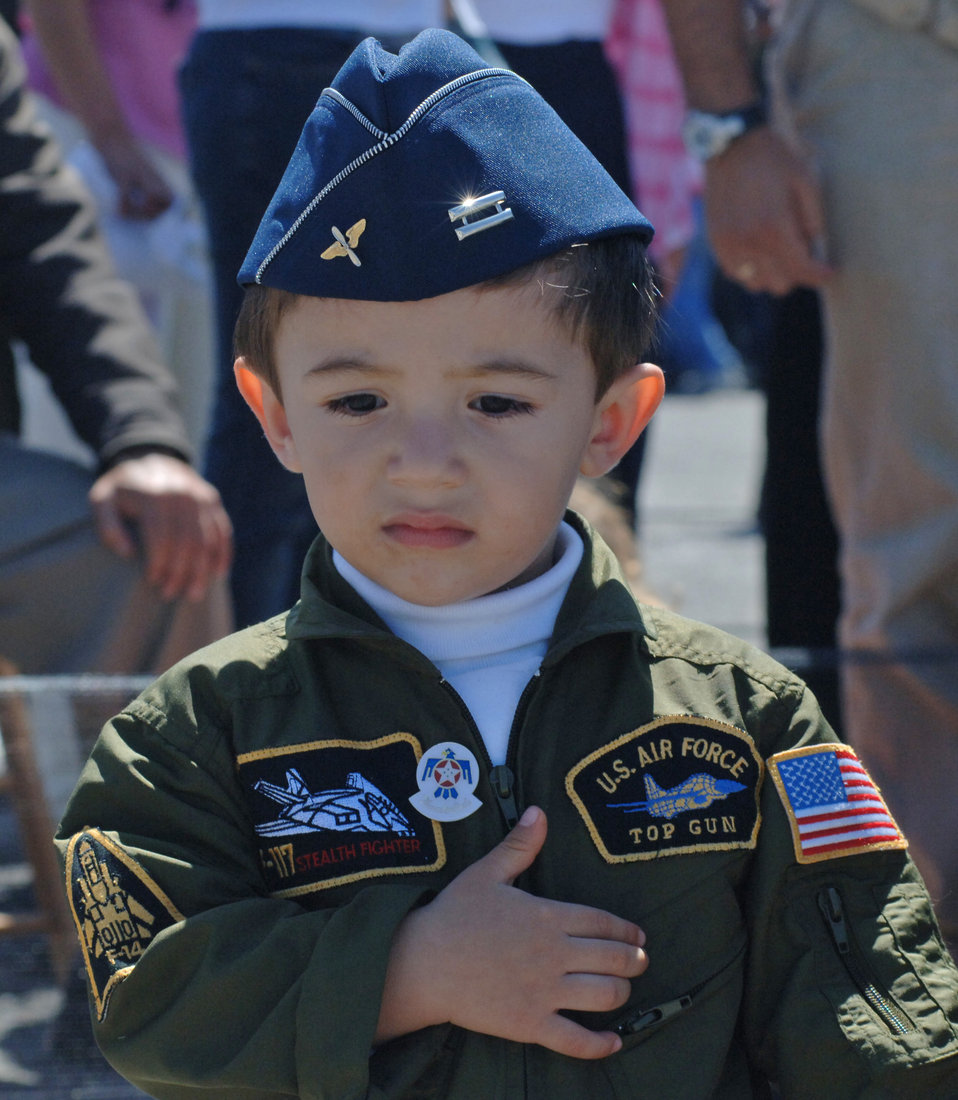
Patriot

GUATEMALA CITY, Guatemala -- A young Guatemalan boy places his hand over his heart during the playing of the national anthem. The Guatemalan International Air Show 2005 took place Oct. 26. Thirteen U.S Air Force aircraft and more than 150 Airmen supported the show.